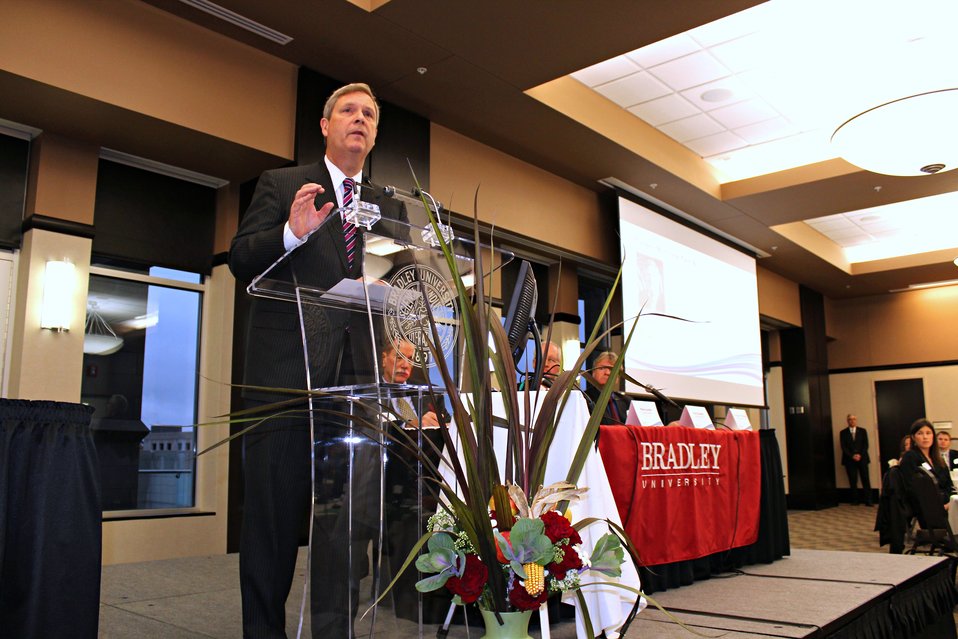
Agriculture Secretary Tom Vilsack keynote speaker at the “Future of Midwest Agriculture and Environmental Sustainability symposium at Bradley University in Peoria, IL, on Thursday, Nov. 3, 2011.